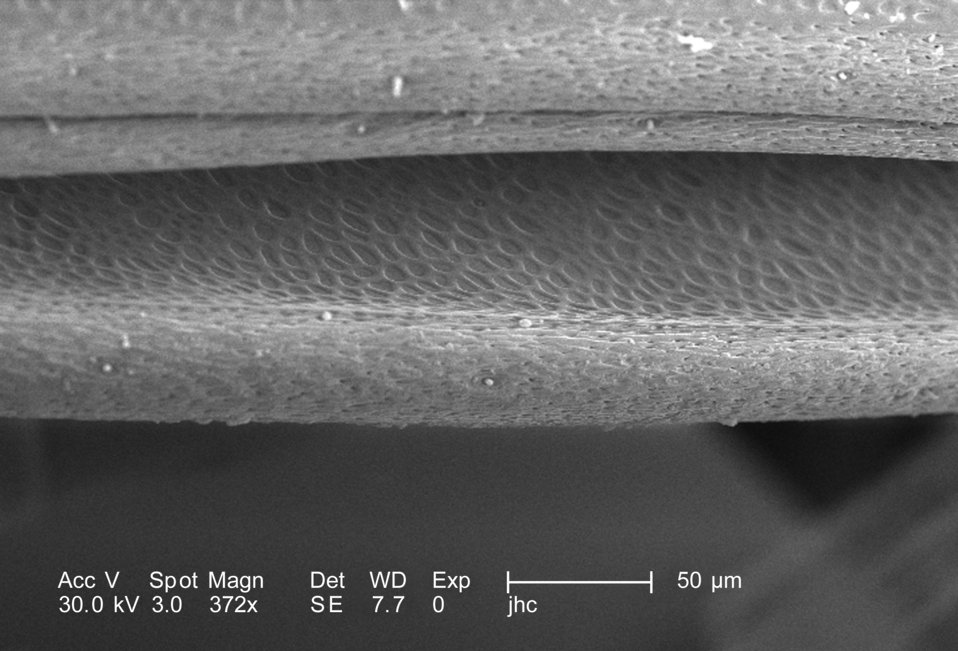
Magnified 372X, approximately eight times greater than PHIL 9939, this scanning electron micrograph (SEM) revealed morphologic details found at the distal tip of this adult 'figeater' beetle's, Cotinis mutabilis, antenna. Known as a 'lamellate' type of antennae, the distal three sensorial segments have been folded over one another, which can be seen here in this image. This morphology is typically found in members of the family Scarabaeidae.The antennae provide the insect with data indicative of changes encountered in its environment such as chemical, thermal, and tactile queues.